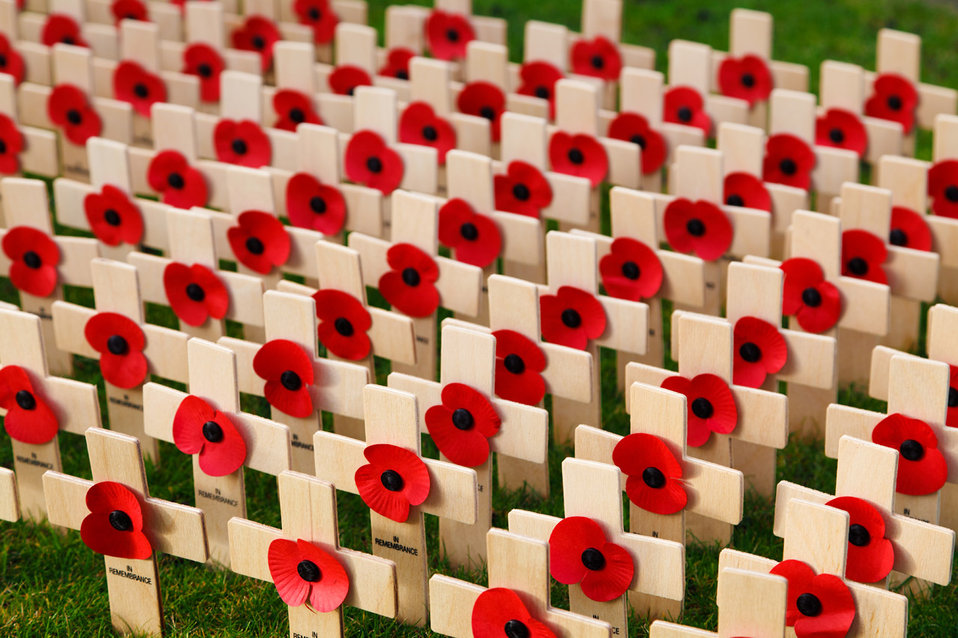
Remembrance day decoration.